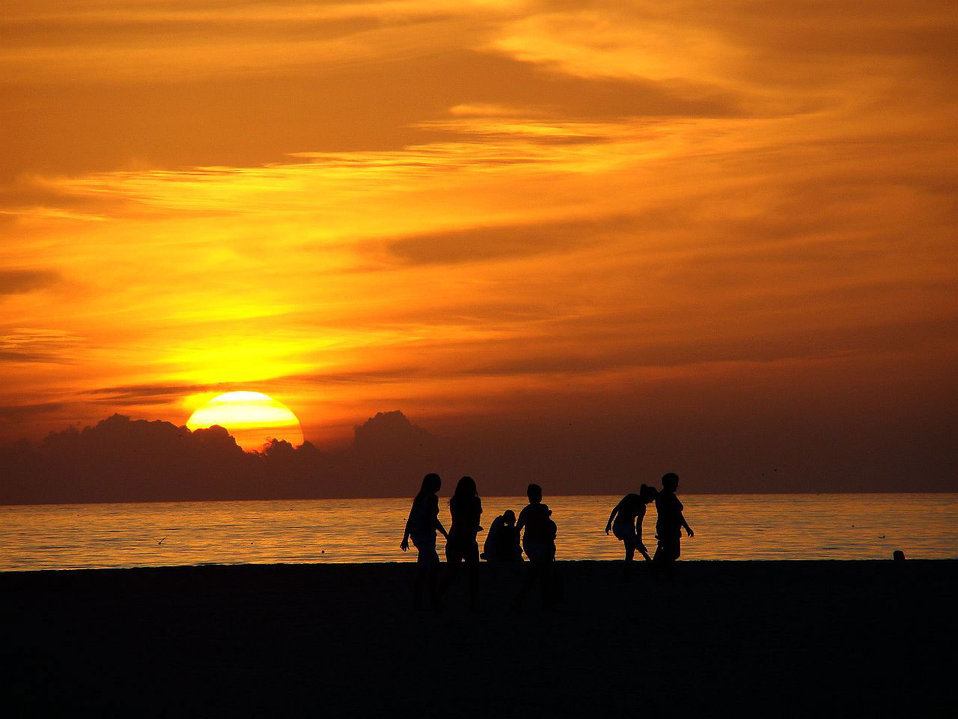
Sunset on the beach

Gulf of mexico amazing sunset.